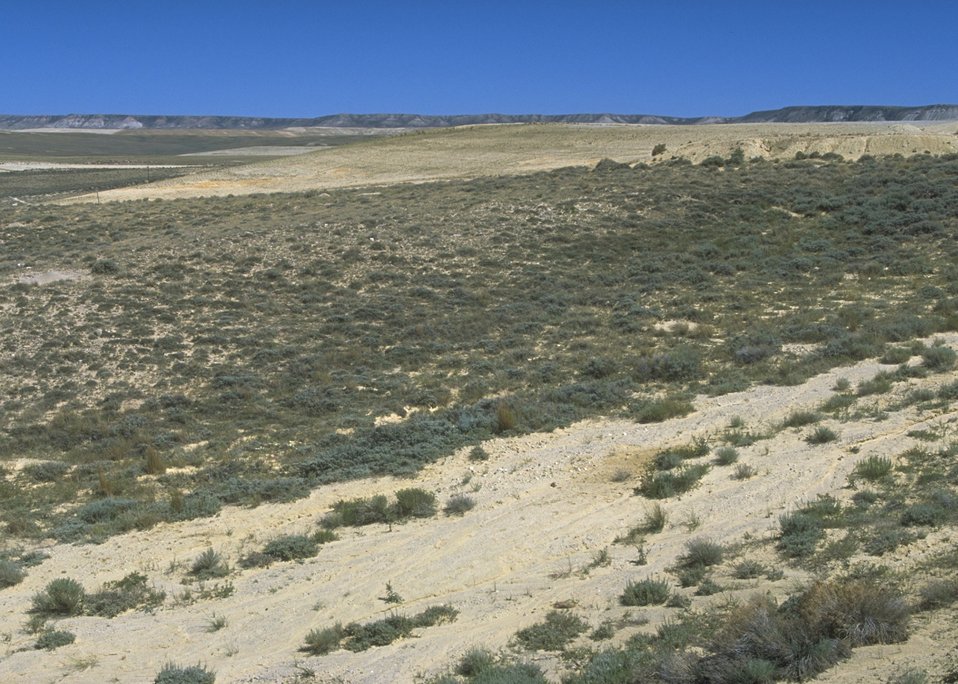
Gas Hill Abandoned Mine Lands in various stages of rehabilitation, Lander Field Office.